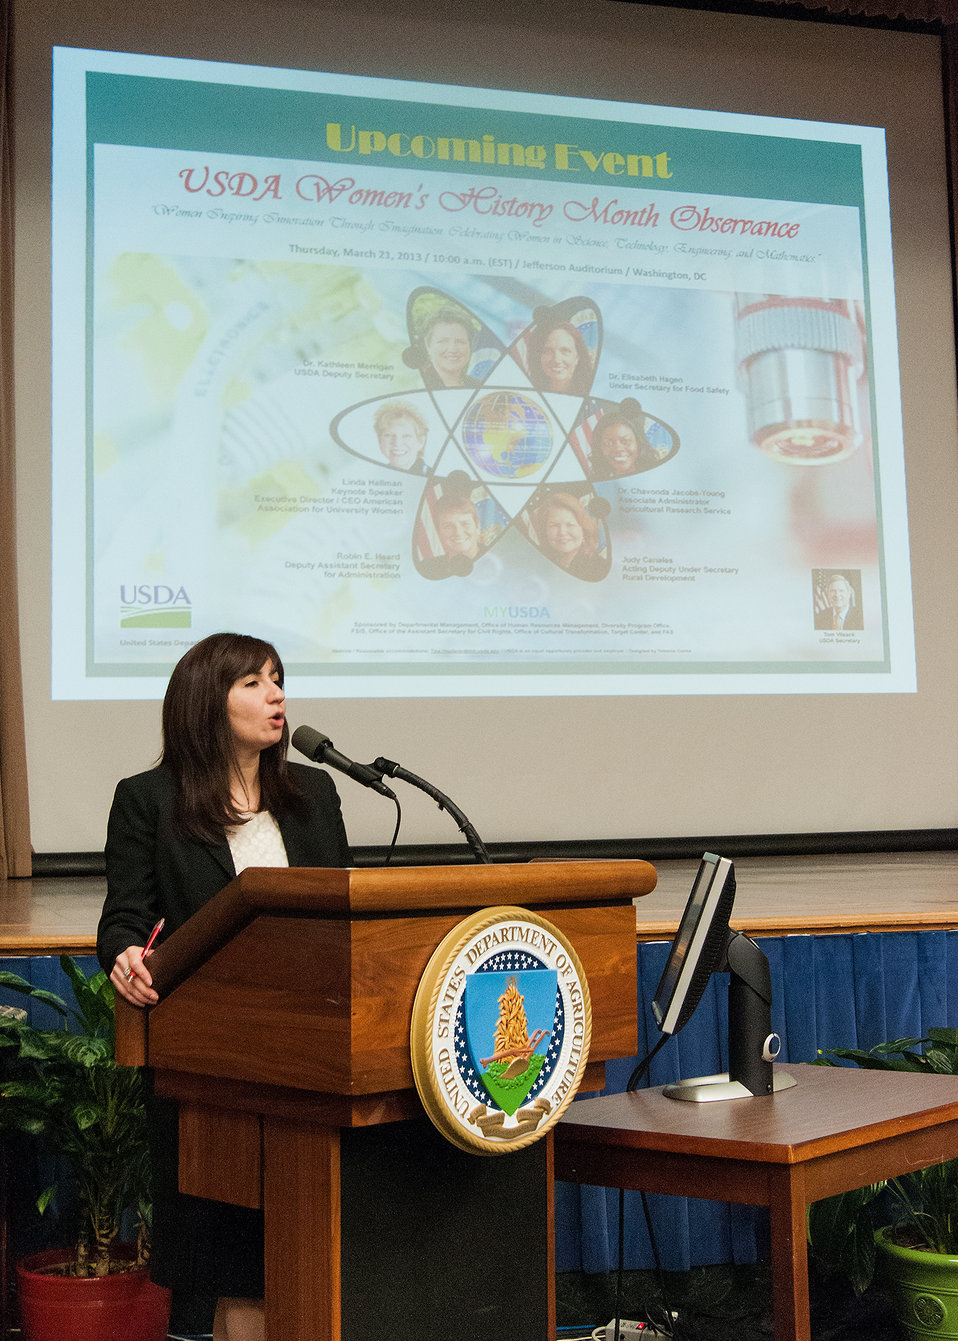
U.S. Office of Personnel Management (OPM) Office of Diversity and Inclusion Director Veronia Villalobos discusses OPM Government Wide Initiatives at the First Annual All Hands Special Emphasis Program Managers (SEPM) Meeting at the U.S. Department of Agriculture Jefferson Auditorium in Washington, D.C. on Wednesday, Mar. 13, 2013.